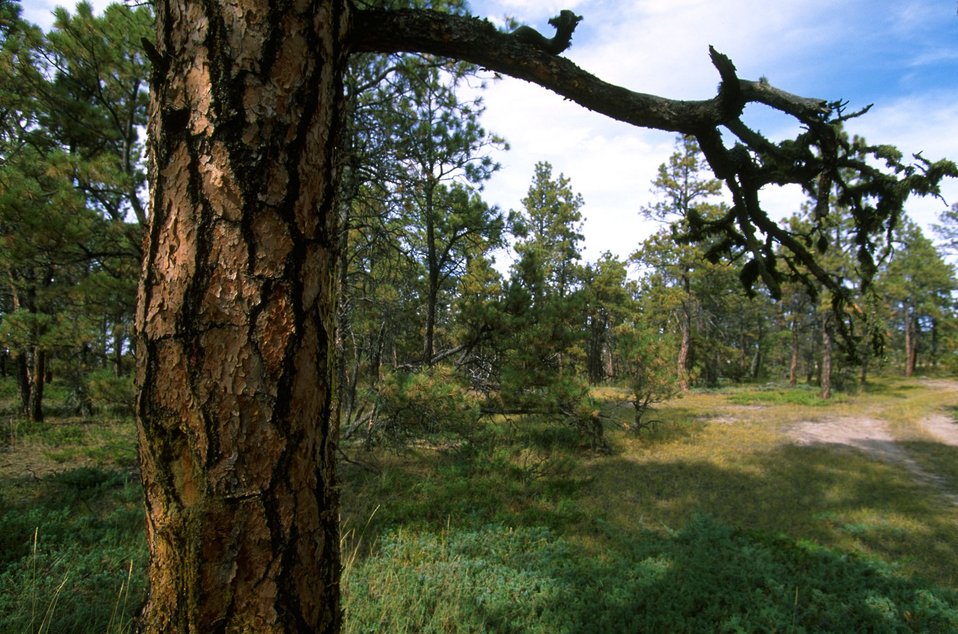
Acid Shale Area of Critical Environmental Concern (ACEC)